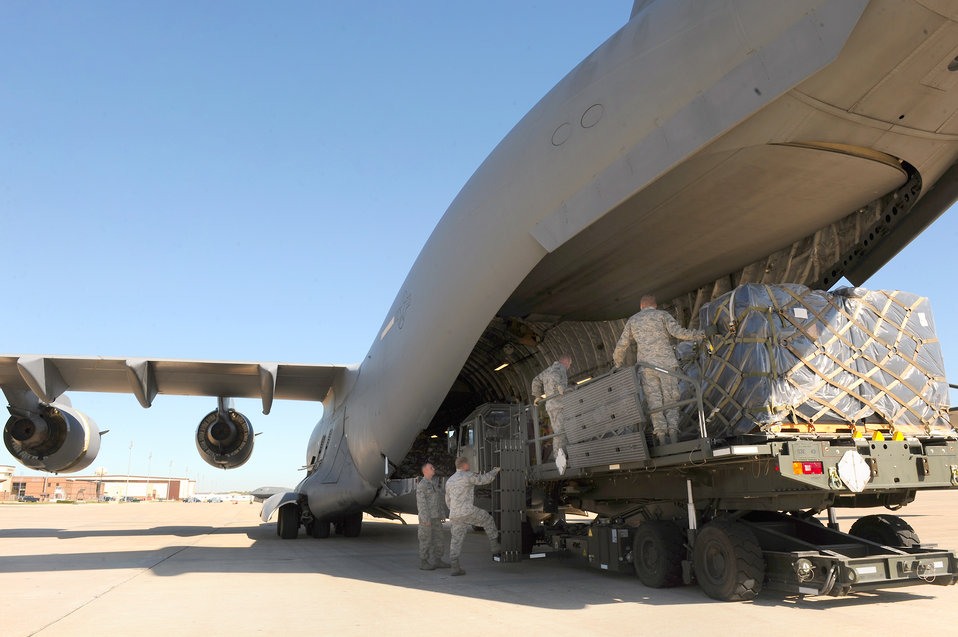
Humanitarian aid PB

Airmen with the 509th Logistics Readiness Squadron load humanitarian aid cargo onto a C-17 Globemaster III, Oct 17, 2010 to be shipped to people in need in Honduras.